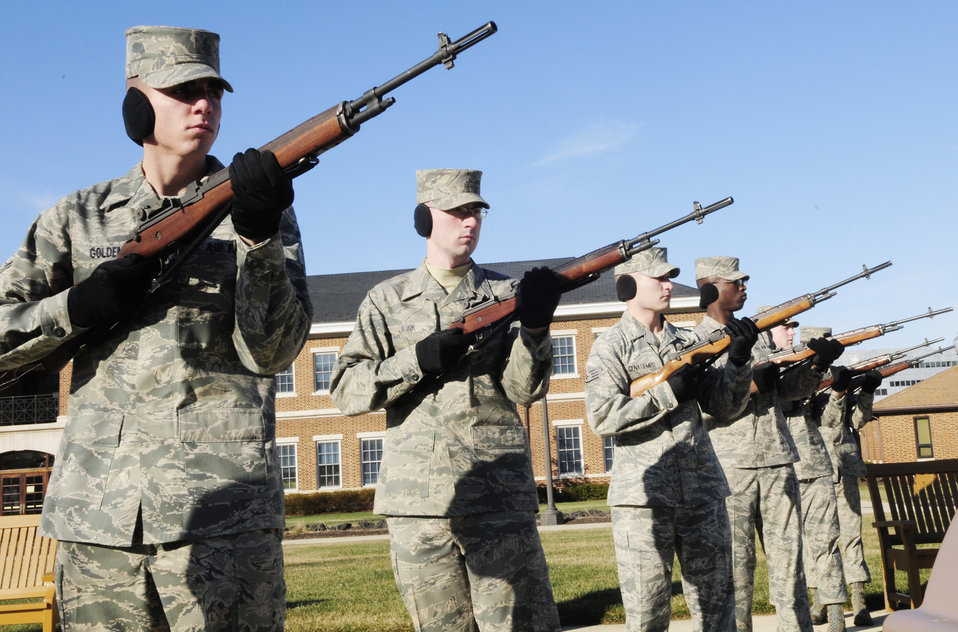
Honor Guard firing party

A U.S. Air Force Honor Guard firing party charges their weapons during a practice session Jan. 7, 2010, at the Honor Guard compound at Bolling Air Force Base, D.C. The firing party performs the firing of three rifle volleys at military funerals. These teams, usually consisting of an odd number of three to seven members, fire three blank rounds in perfect unison to honor fallen service members. Currently, there are 60 Honor Guard members whose primary qualification is firing party, and teams perform at anywhere from 1,200 to 1,500 funerals a year.